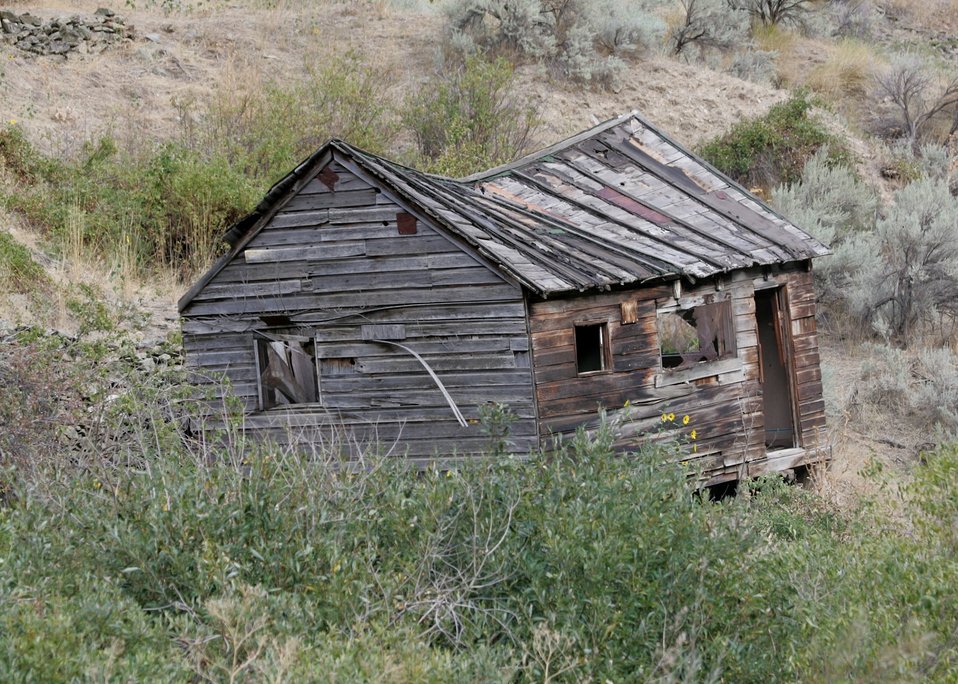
Historic mining cabin along Connor Creek in eastern Oregon.